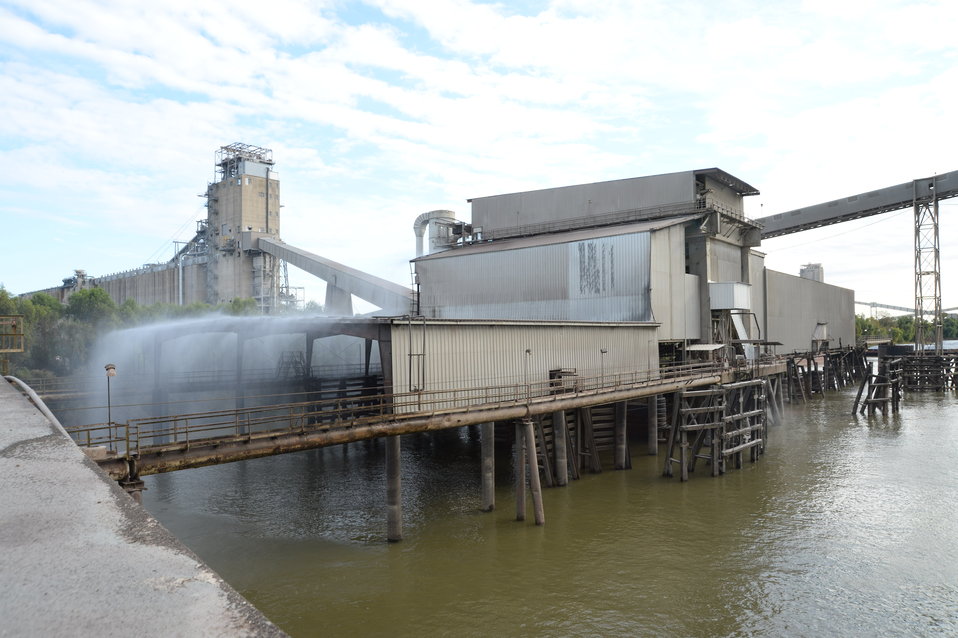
U.S. Department of Agriculture (USDA) Grain Inspection, Packers and Stockyards Administration (GIPSA) Federal Grain Inspection Service (FGIS) grain stations are washed down to cleanse loading and unloading areas and to prevent grain dust buildup near the Port of New Orleans in New Orleans, LA on Tuesday, Nov. 19, 2013.